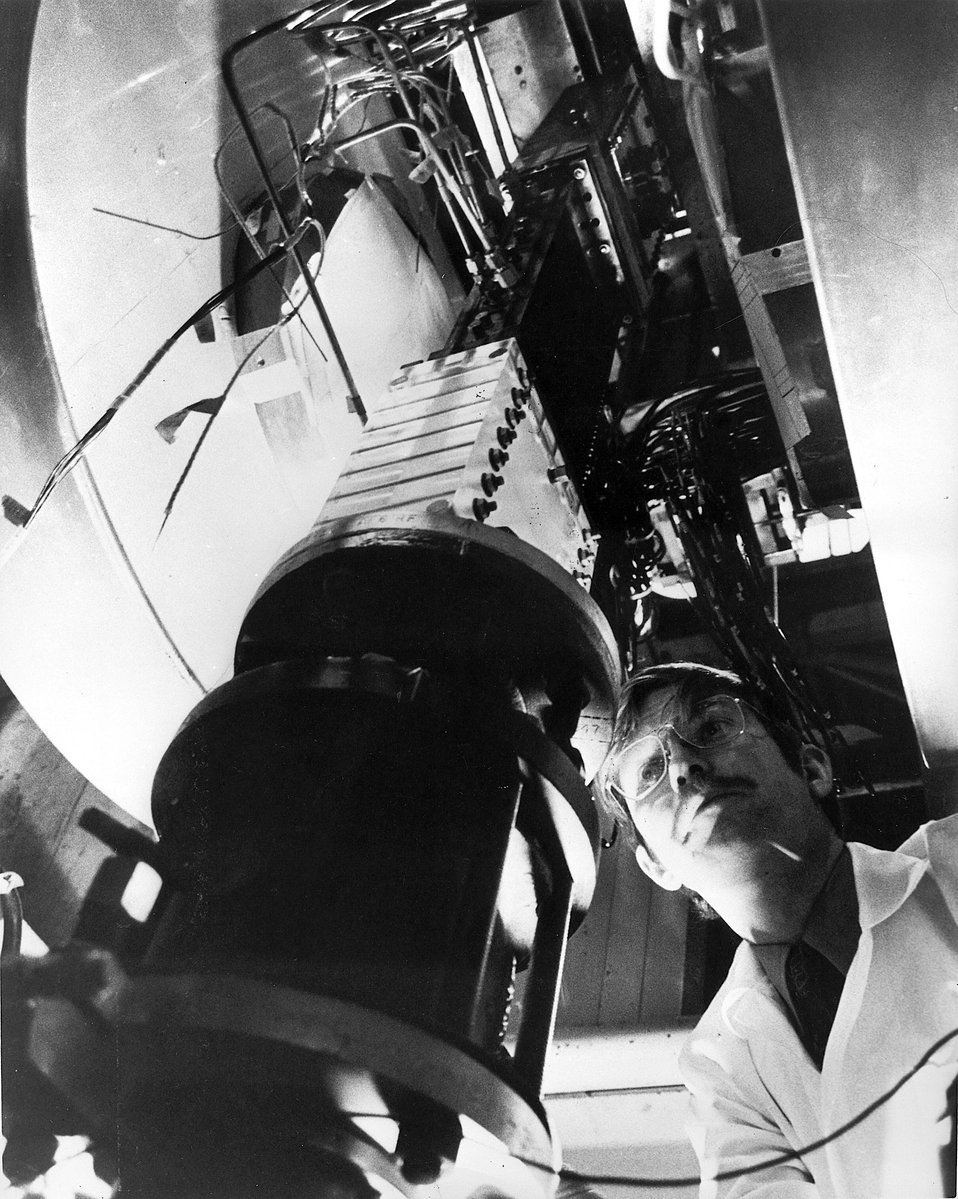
A magnetohydrodynamics (MHD) test section is fitted into a liquid metal loop at DOE's Argonne. Argonne is studying the generation of electricity using MHD methods.
c.1973